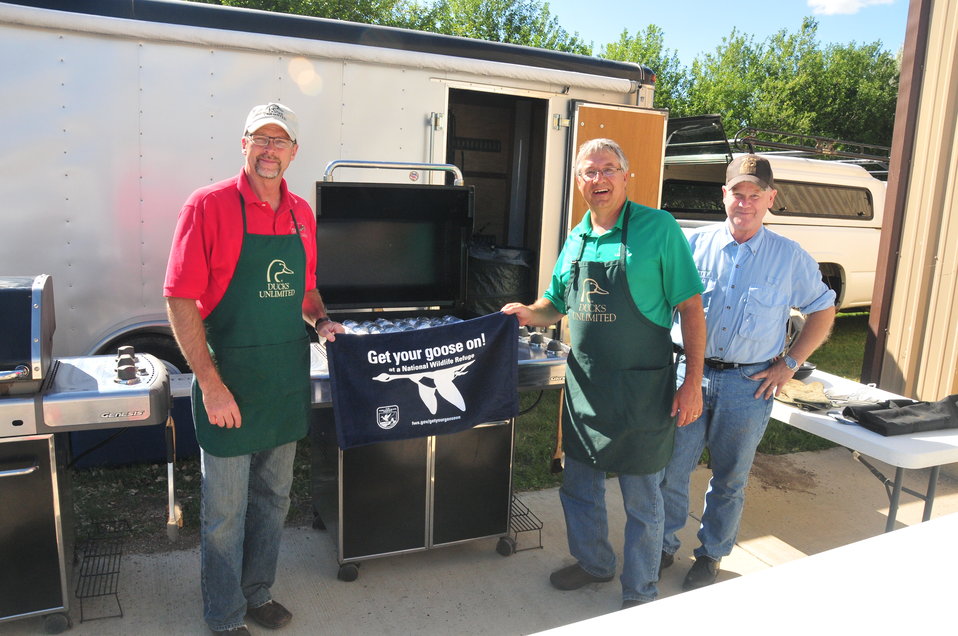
Get Your Goose On!

The national meeting for regional chiefs of the National Wildlife Refuge System is held three times a year in different locations around the country. This 2012 meeting took place in McPherson County, South Dakota, and focused on the Dakota Grassland Conservation Area.

This photo was taken on the Wade Weiszharr and Family Ranch, which contains perpetual U.S. Fish and Widlife grassland and wetland easements. This site is also located in the heart of Prairie Pothole Region, making it extremely productive migratory bird habitat and a great place to “Get your goose on!”

In this photo Ducks Unlimited representatives are shown grilling for the group! From left to right Kevin Brown, Randy Renner, and Dave Campbell 'get their goose on' before serving a delicious lunch!